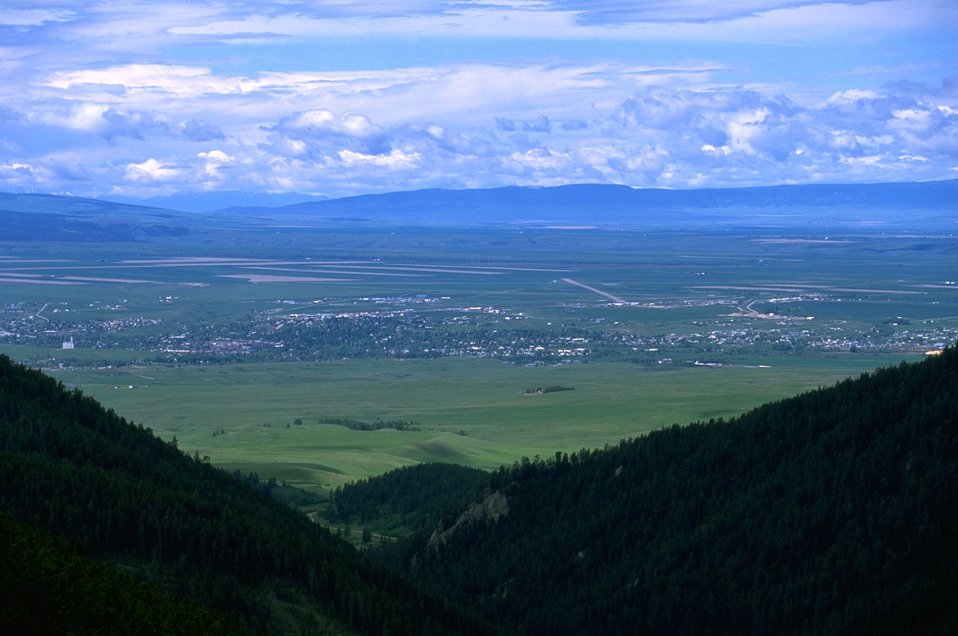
Looking down on Lewistown MT from the Judith Mountains